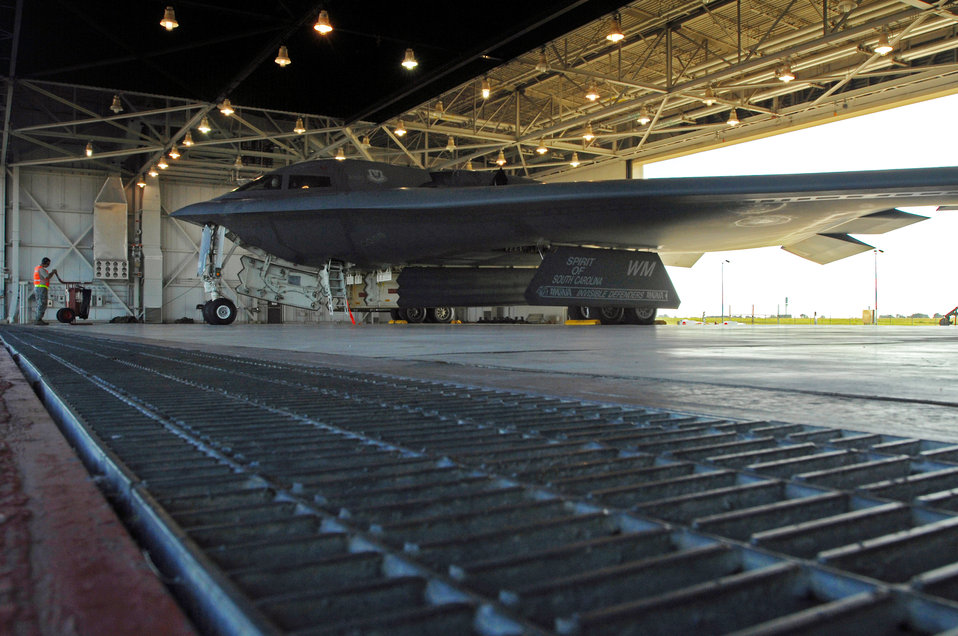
Ready for takeoff

Crew chiefs with the 509th Aircraft Maintenance Squadron prep this B-2 Spirit for takeoff Aug. 22 at Whiteman Air Force Base, Mo. The 509th Bomb Wing has 20 Spirits in its inventory.